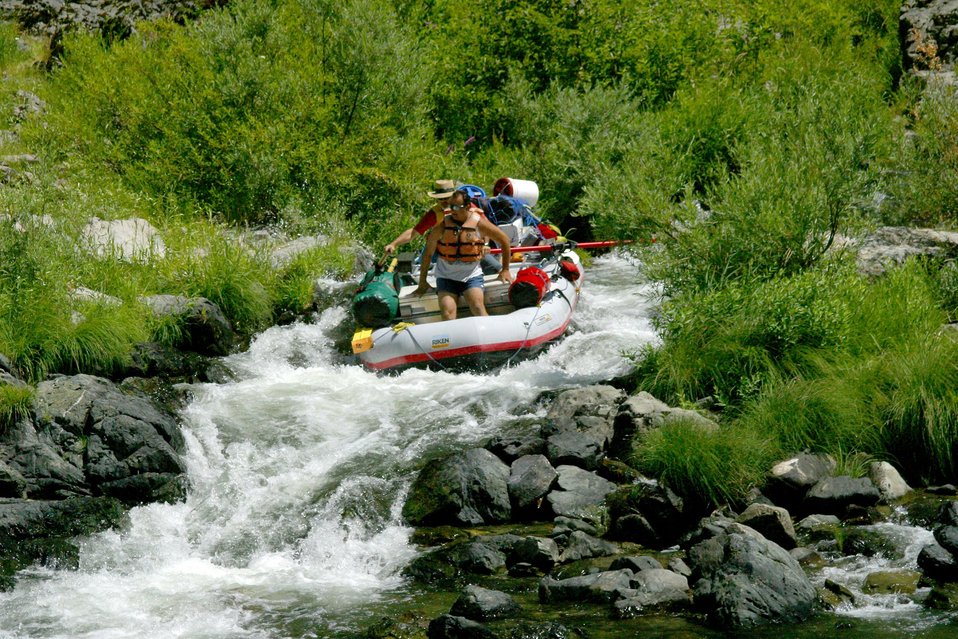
Rainie Falls Fish Ladder